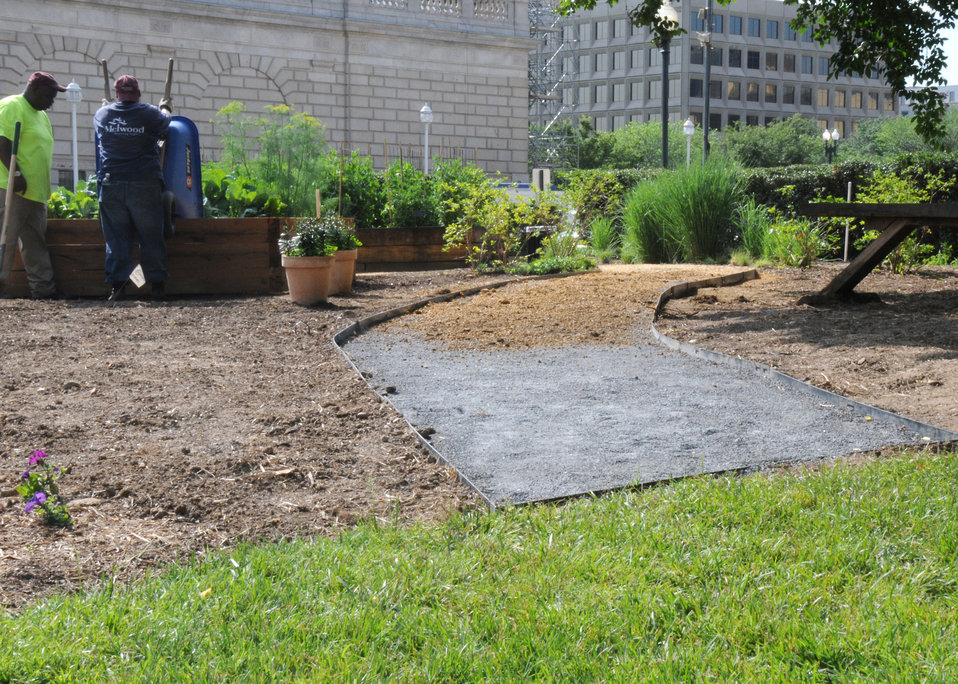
On Friday, May 28, 2010 the Department of Agriculture People’s Garden in Washington, DC prepares new planting beds for New Mexico chiles and expands the pathways through the garden. USDA photo 10di1383-81.